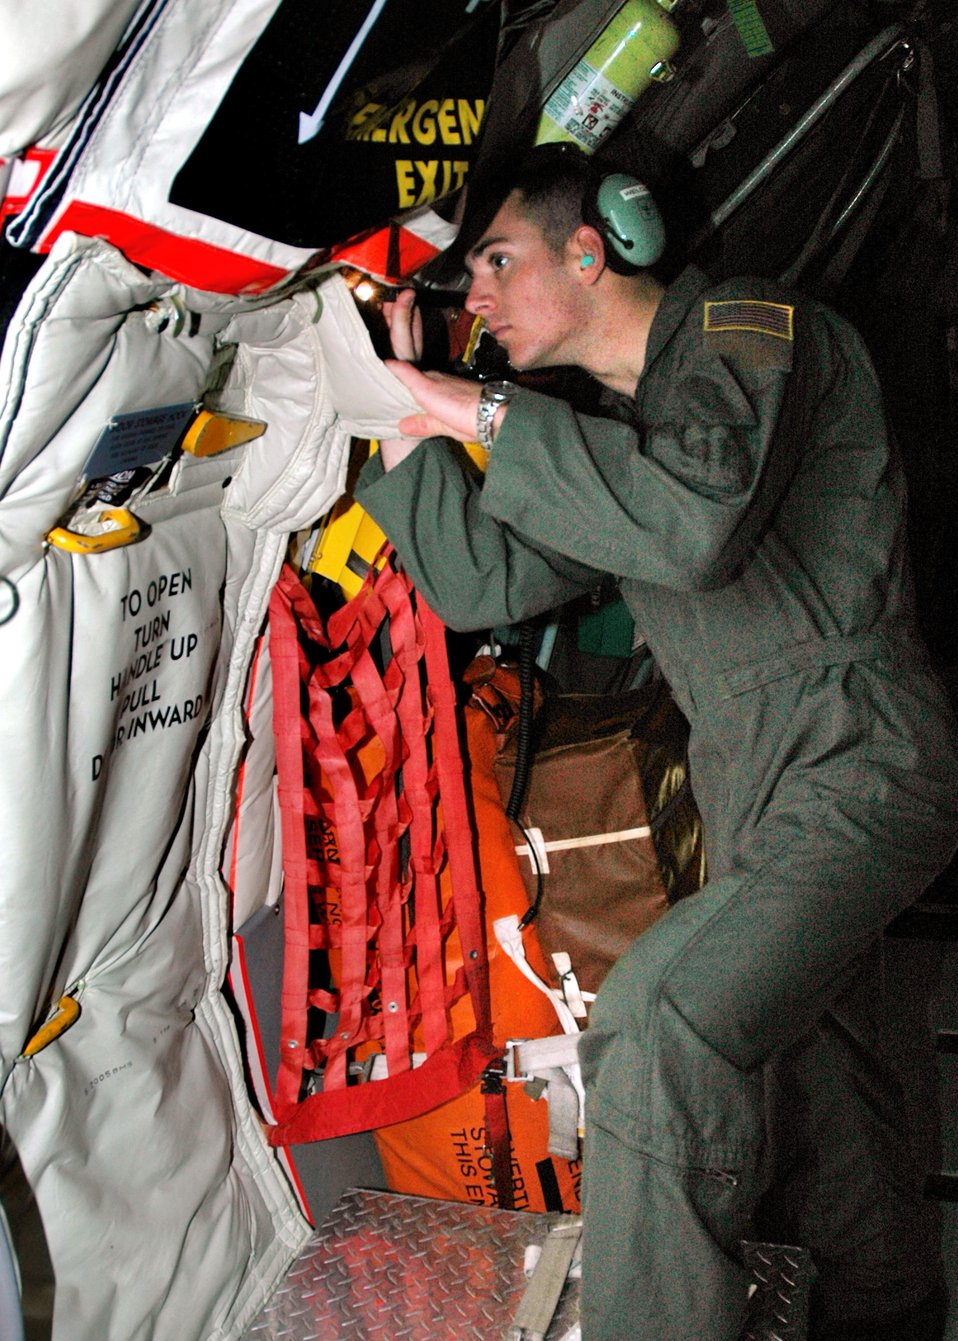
Toping up the Extender

Airman 1st Class Lance M. Welch, boom operator with the Air Force Reserve Command?s 940th Air Refueling Wing, inspects the interior of a KC-135 Stratotanker prior to a scheduled training mission Jan. 3, 2007 at Beale Air Force Base, Calif.